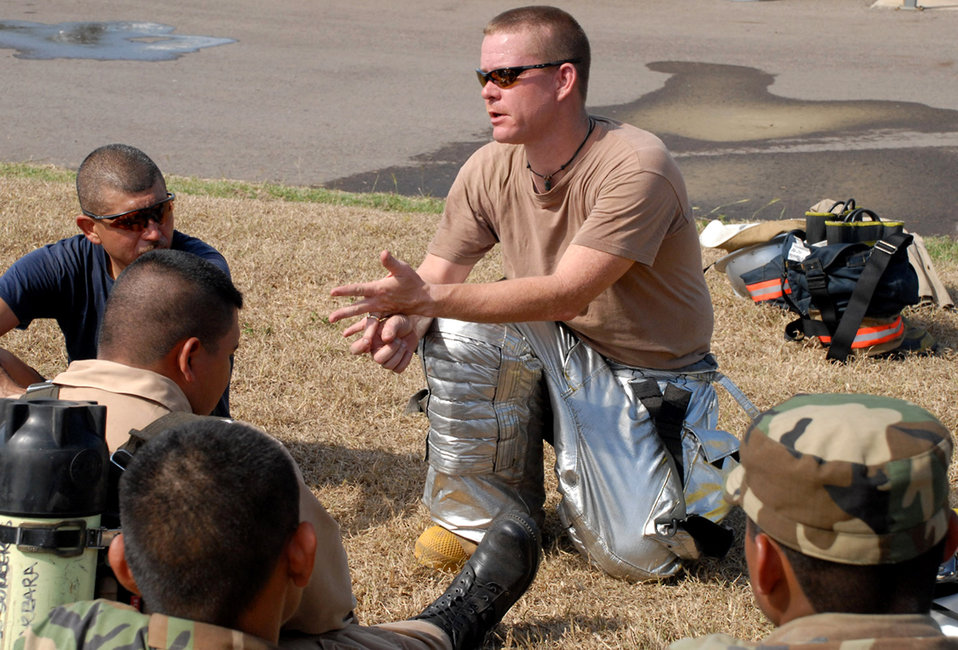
Firefighters exchange knowledge, experience

Staff Sgt. Dustin Jackson provides advice for Honduran firefighters just coming out of the Joint Task Force-Bravo